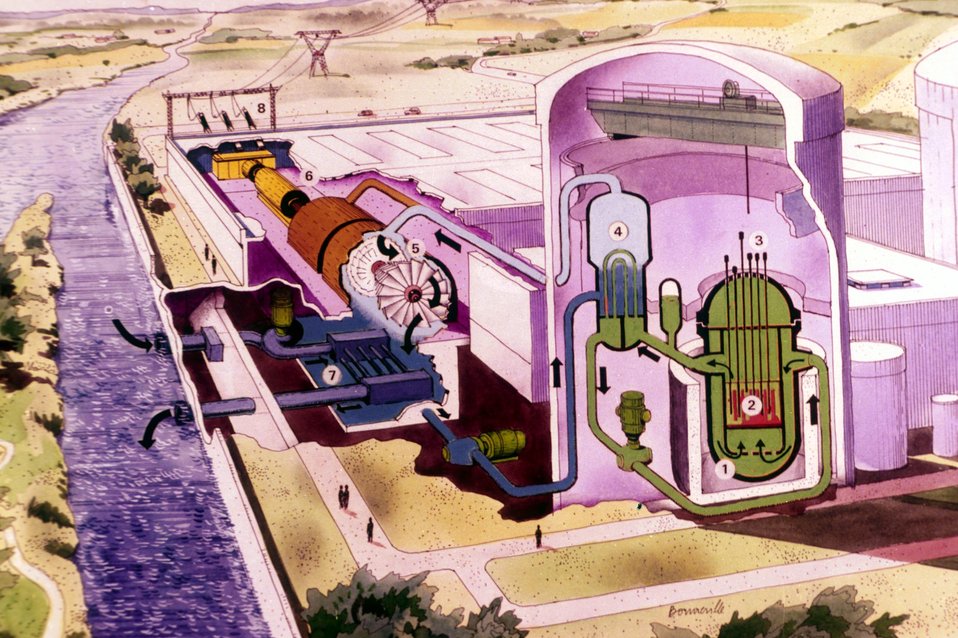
EcorchÐ d'une centrale µ eau ordinaire (variante P.W.R.).